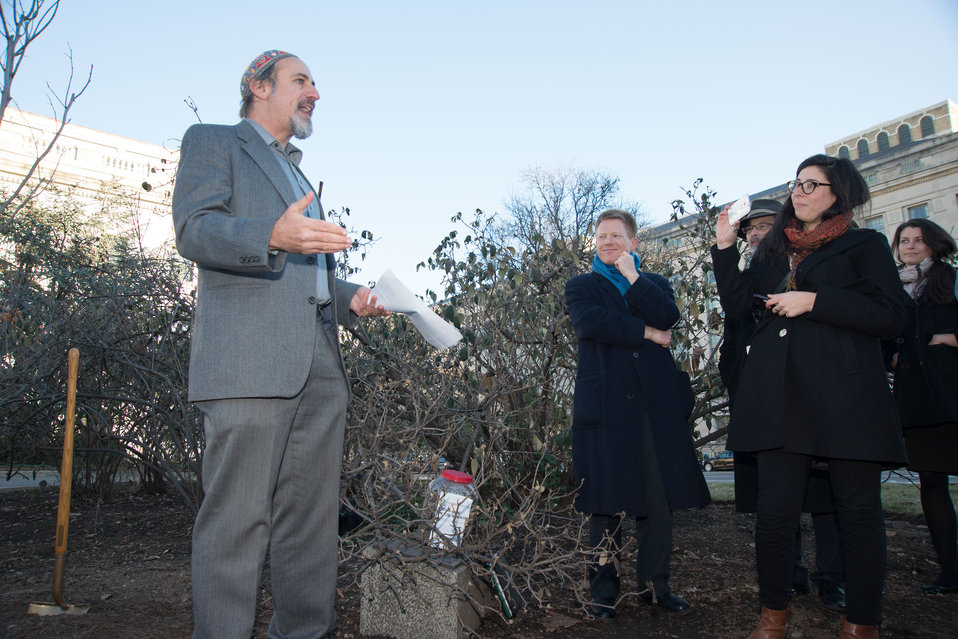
Adat Shalom Reconstructionist Synagogue Rabbi Fred Scherlinder Dobb speaks at the planting ceremony of a Redbud tree on the west lawn of the U.S. Department of Agriculture (USDA), on Thursday, Jan. 16, 2014. This ceremony commemorates Tu B’Shevat, the Jewish New Year of the Tree.